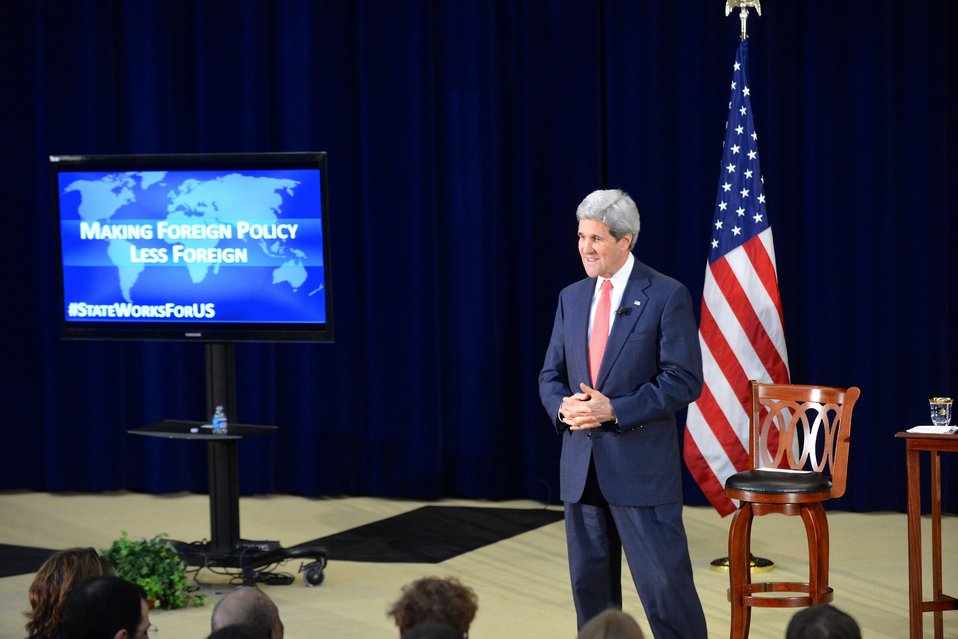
Secretary Kerry Hosts a Town Hall on ‘Making Foreign Policy Less Foreign’

U.S. Secretary of State John Kerry hosts a Town Hall, moderated by BuzzFeed’s Miriam Elder, on ‘Making Foreign Policy Less Foreign’ with university students from around the country attending Washington-area programs, Congressional interns, and U.S. Department of State interns at the Department in Washington, D.C., on March 18, 2014.